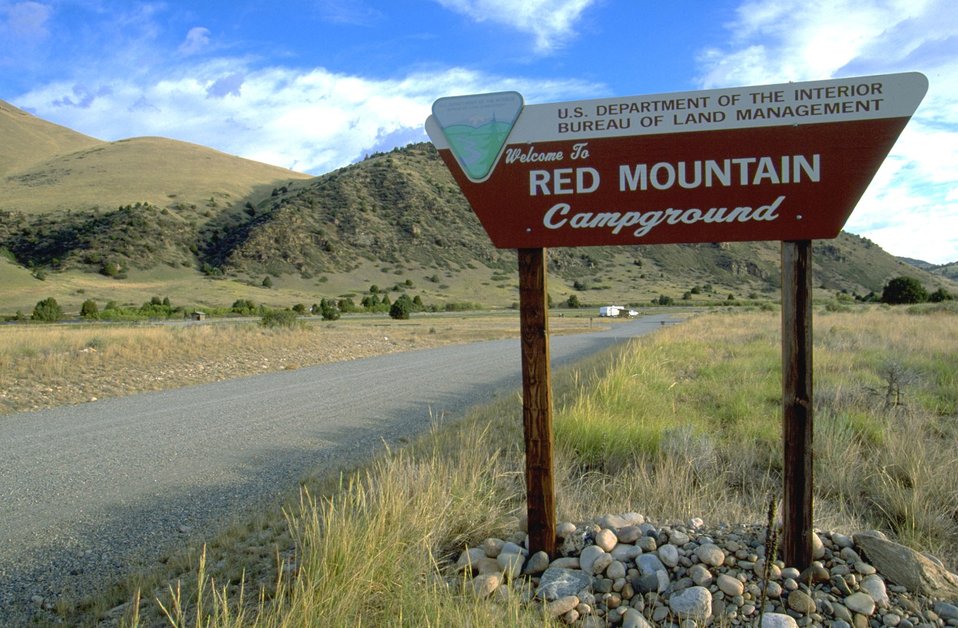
Sign at the entrance to Red Mountain Campground